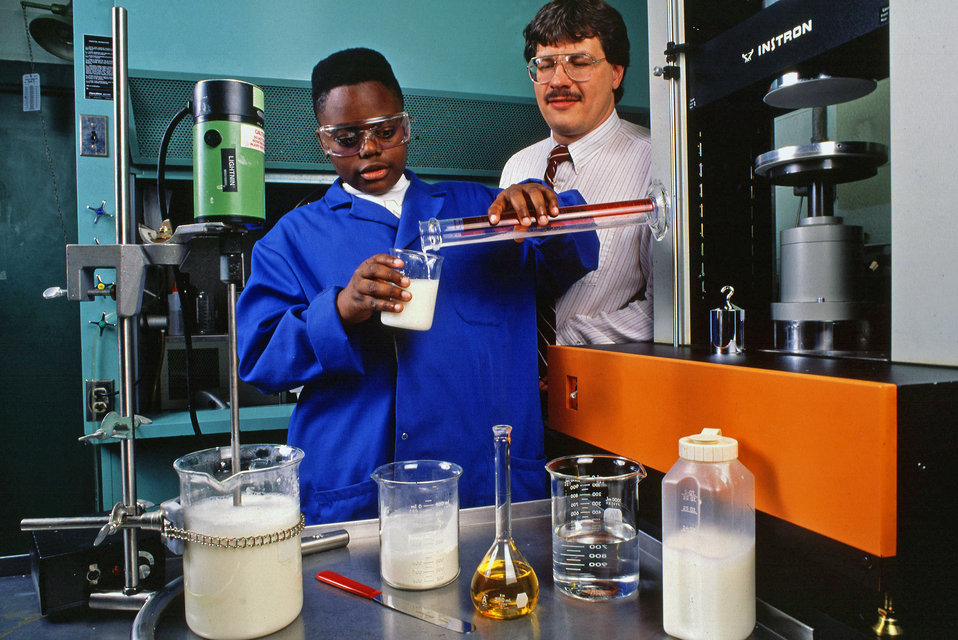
Under the Adopt-a-school Program, student Alijha Griffin (left) helps U.S. Department of Agriculture (USDA) Agriculture Research Service (ARS) technician Steven Lyle test a milk beverage developed at the USDA ARS National Center for Agricultural Utilization Research in Peoria, IL.